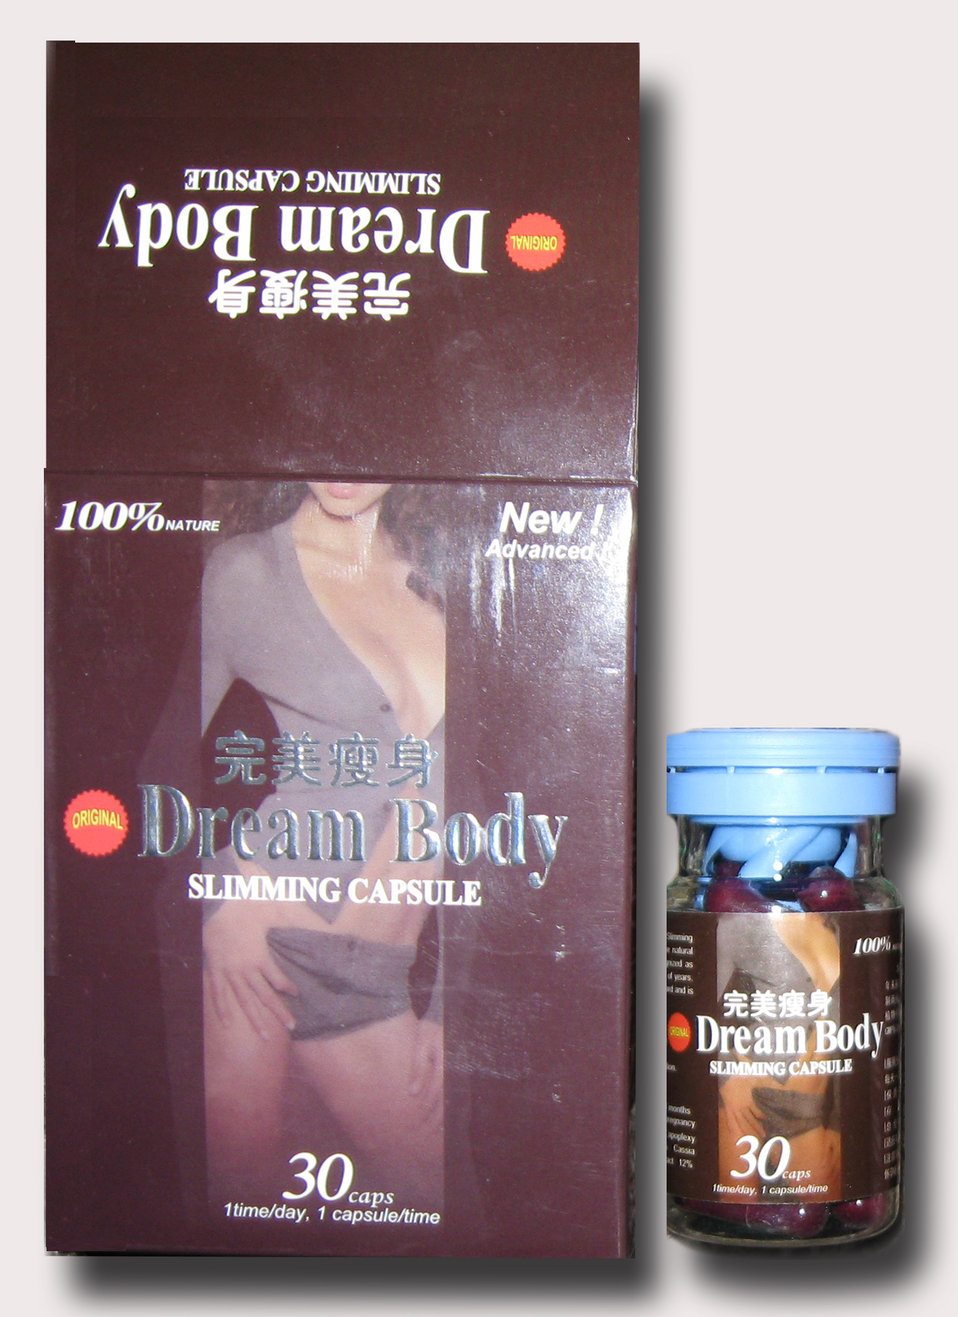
Dream Body Slimming Capsule

January 21, 2014 - The FDA is advising consumers not to purchase or use Dream Body Slimming Capsule , a product promoted and sold as a dietary supplement for weight loss. The product was found to contain undeclared sibutramine.